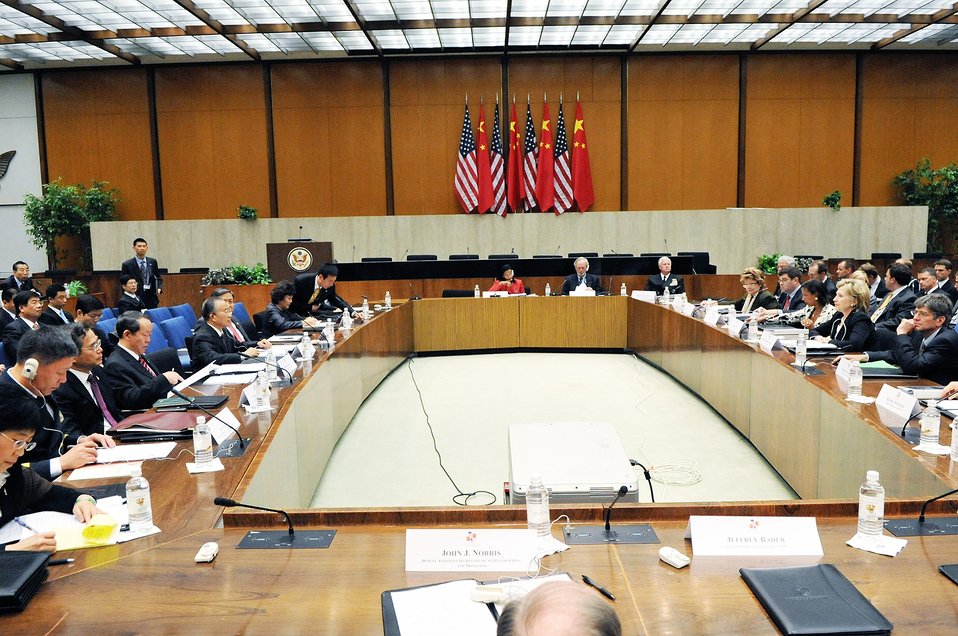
Secretary Clinton Attends U.S.-China Strategic and Economic Dialogue

U.S. Secretary of State Hillary Rodham Clinton at the Strategic Track Session 1 on Bilateral Relations during the U.S.-China Strategic and Economic Dialogue at the U.S. Department of State in Washington, DC July 27, 2009.